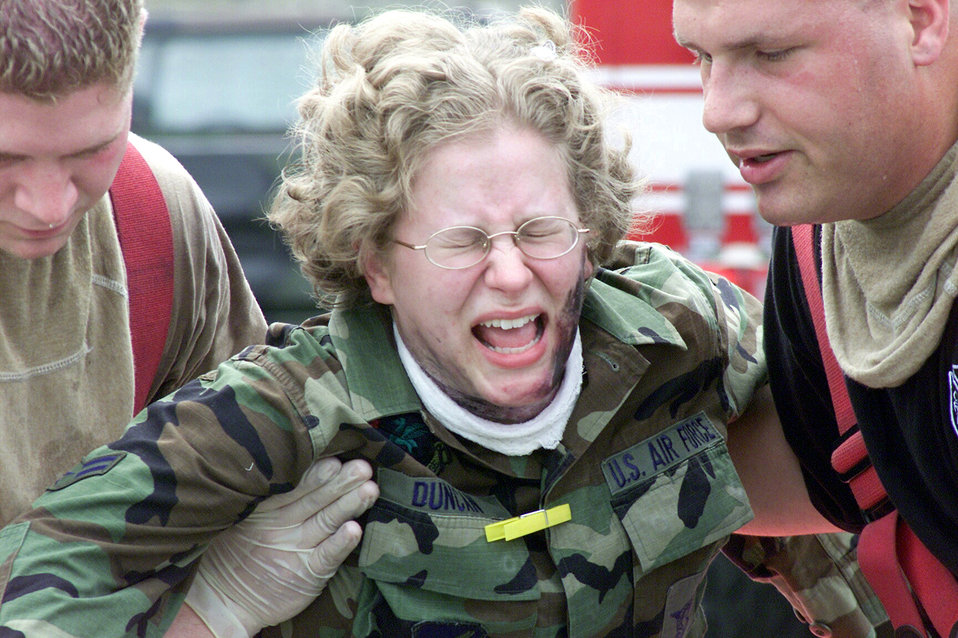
Scream

OSAN AIR BASE, South Korea -- Airman 1st Class Allison Duncan grimaces in pain as she plays a crash victim during a mass casuality scenario here. The base is particpating in Beverly Bulldog 03, which is a penninsula-wide combat employment readiness exercise.